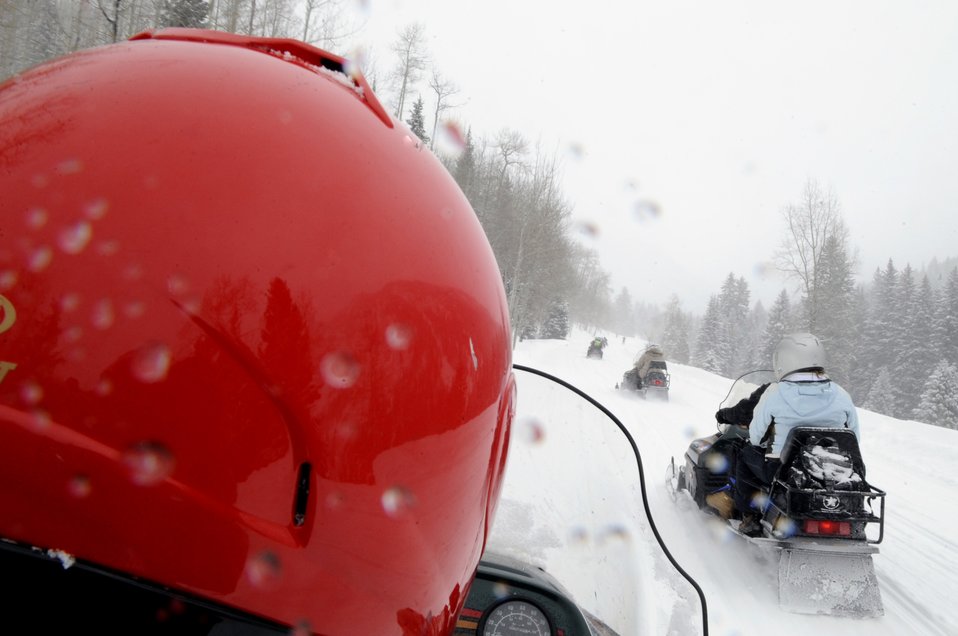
23rd National Disabled American Veterans Winter Sports Clinic

Veterans drive snowmobiles Apr. 1 during the 23rd National Disabled American Veterans Winter Sports Clinic in Snowmass Village, Colo. The six-day event that began March 28 teaches veterans with disabilities skills in adaptive Alpine and Nordic skiing, and introduces them to a number of other recreational activities and sports.